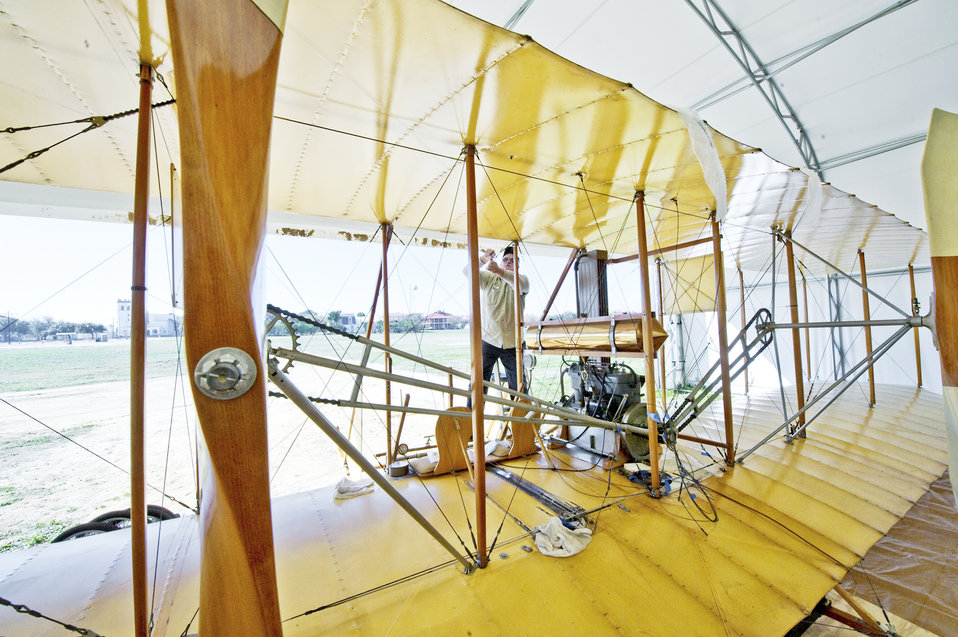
John Kennedy attaches structural cables on